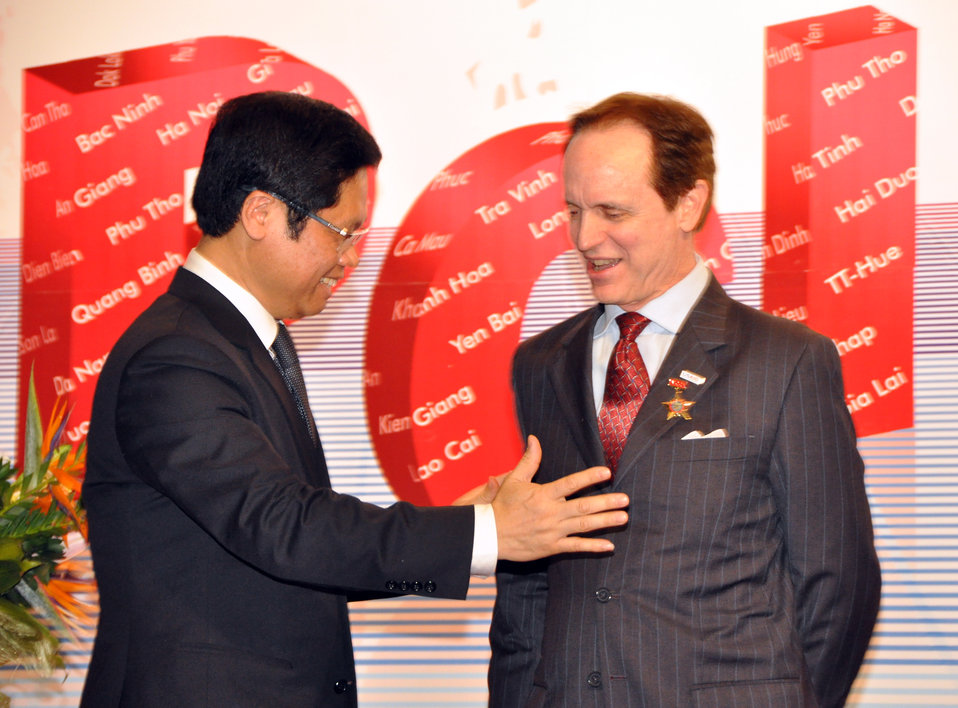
USAID Mission Director Francis Donovan receives award from VCCI Chairman Vu Tien Loc at the Provincial Competitiveness Index 2011 Launch